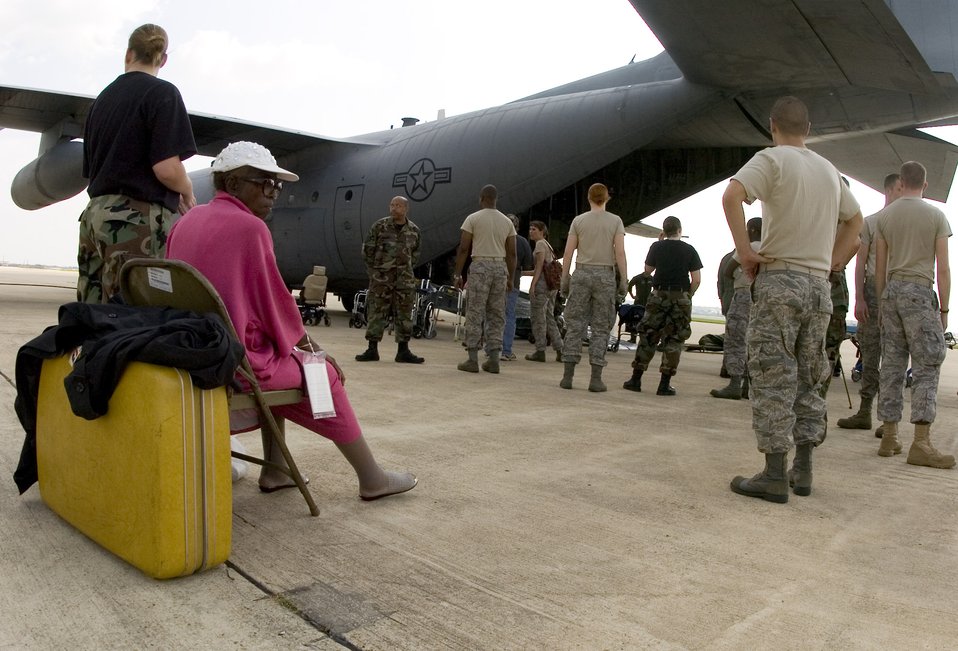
Hurricane Relief

Frances Boudoin sits on a chair on the flight line at the former Kelly Air Force Base, Texas, Aug. 30 as she awaits transportation to a shelter. The Texas Air National Guard C-130 brought 23 evacuees from Beaumont, Texas, to San Antonio before Hurricane Gustav reached the Gulf Coast. Members from the 37th Training Wing and 59th Medical Wing at Lackland AFB, Texas, and from the Air National Guard and Air Force Reserve help in the hurricane relief efforts as Hurricane Gustav approaches the Gulf Coast. The Port of San Antonio on Kelly AFB is the staging base for FEMA Region 6.